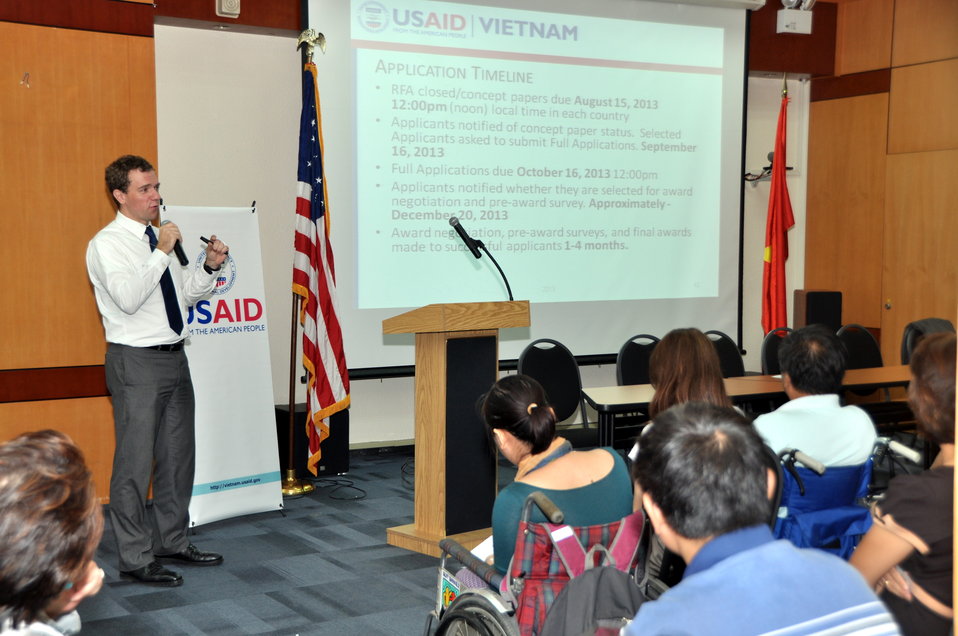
Development Grants Program Workshop in Hanoi

July 24, 2013